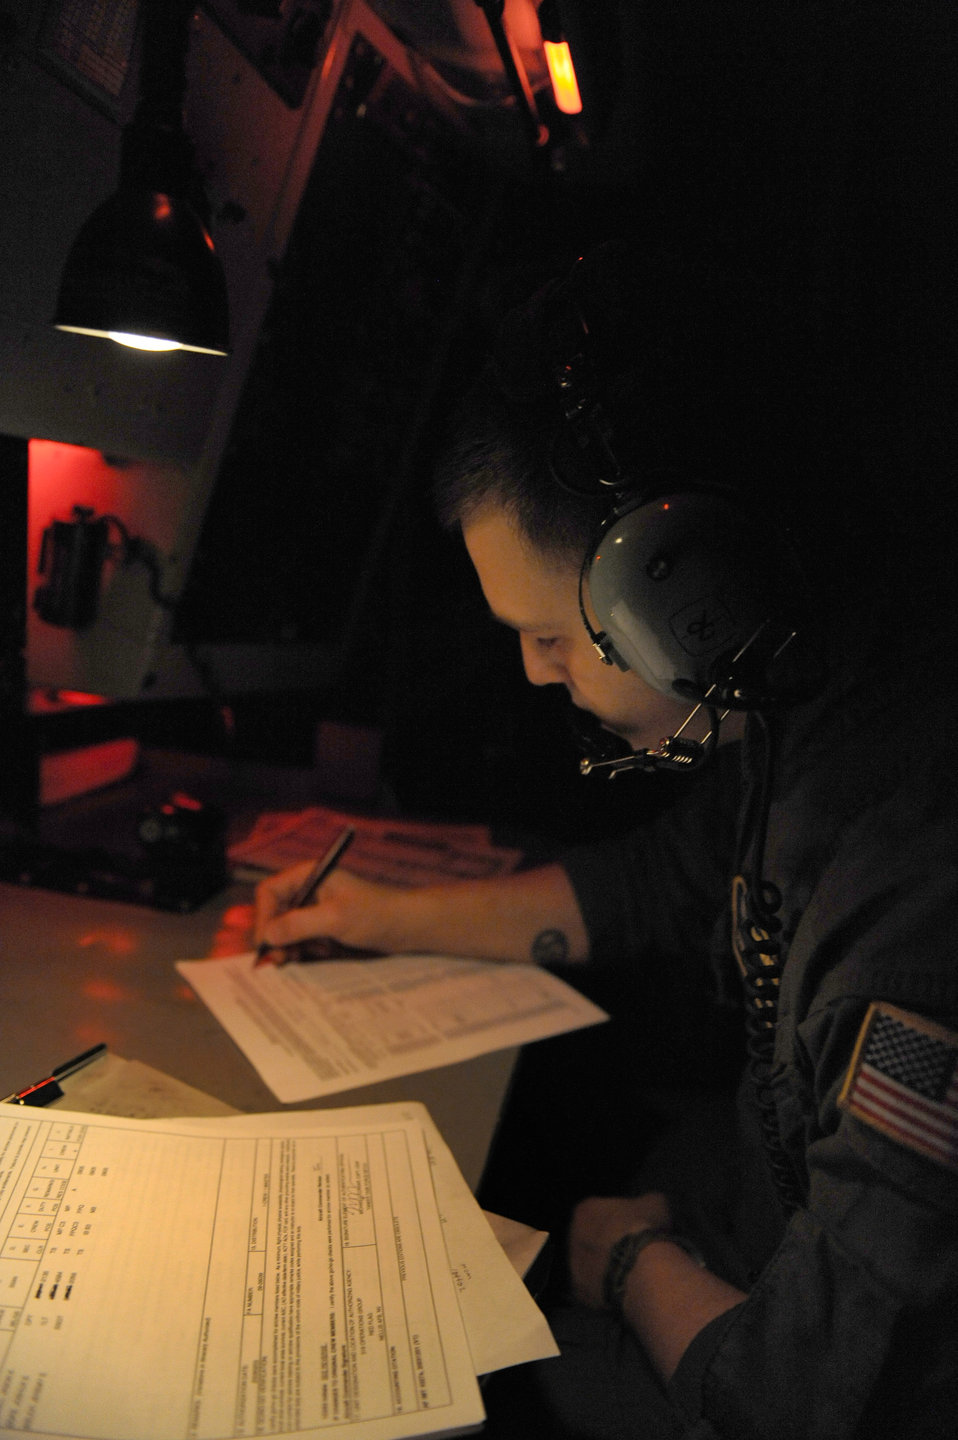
Night operations at Red Flag

Staff Sgt. Jeremy Welch documents a pre-flight inspection Feb. 3 in the cockpit of a KC-135 Stratotanker during a Red Flag exercise at Nellis Air Force Base, Nev. Red Flag is a multi-national exercise providing a realistic environment to practice combat scenarios. The experience gained during the exercise is vital to the survival of air crews in combat. Sergeant Welch is a boom operator with the 905th Air Refueling Squadron at Grand Forks AFB, N.D.